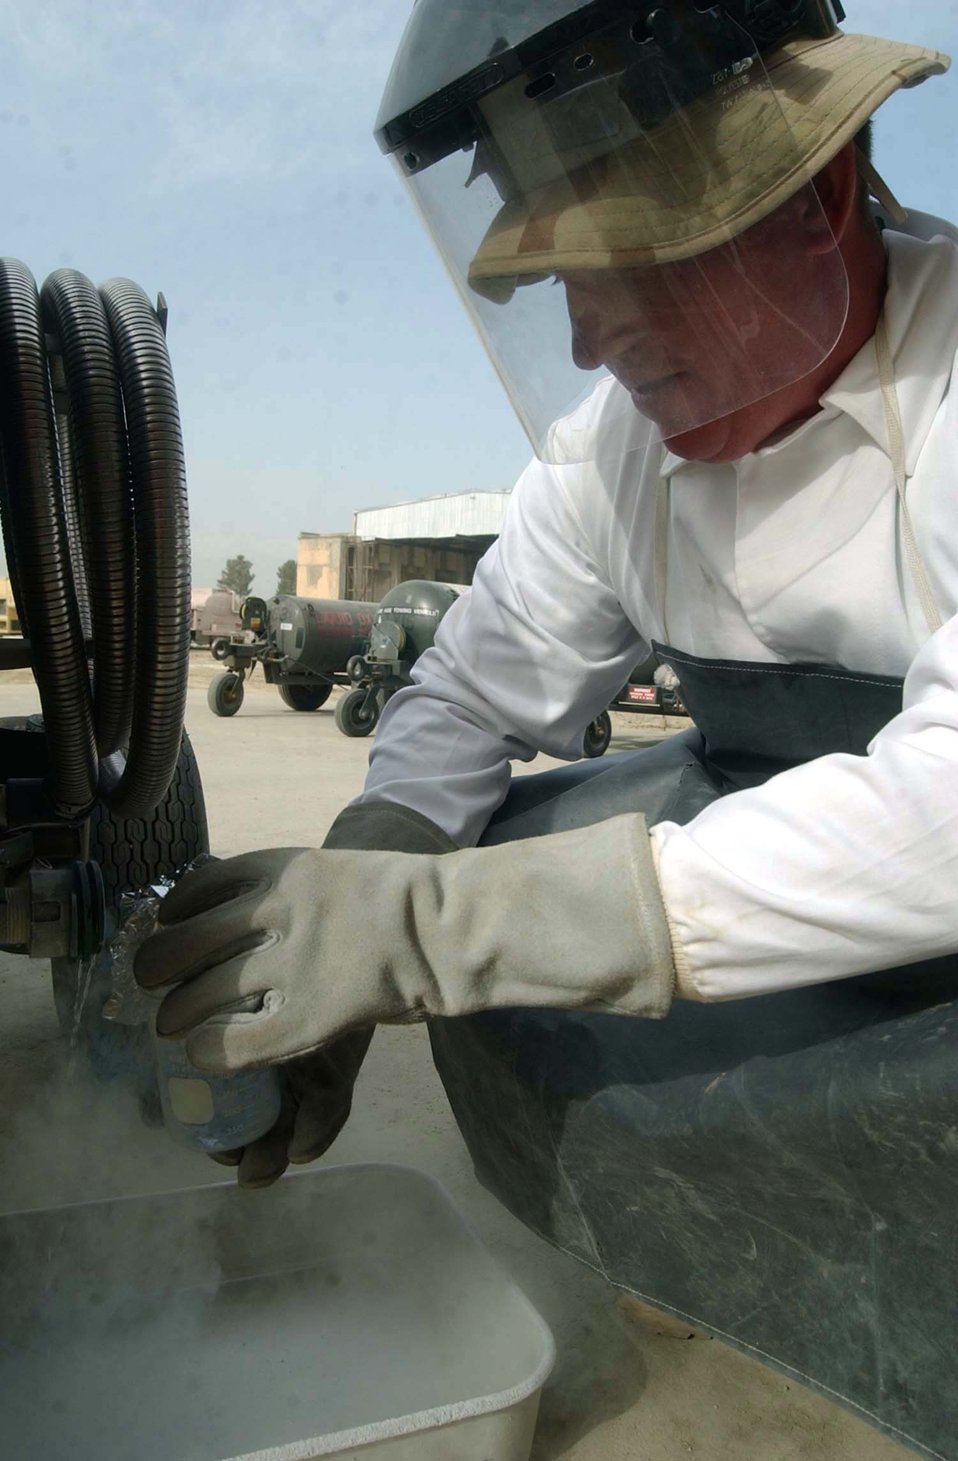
Bagram fuels

BAGRAM AIR BASE, Afghanistan -- Tech. Sgt. Robbie Bebee draws a liquid-oxygen sample from a cart that he just filled. The liquid in the beaker is minus-297 degrees. Sergeant Bebee is assigned to the 455th Expeditionary Operations Group fuels flight, and he is deployed from Davis-Monthan Air Force Base, Ariz.